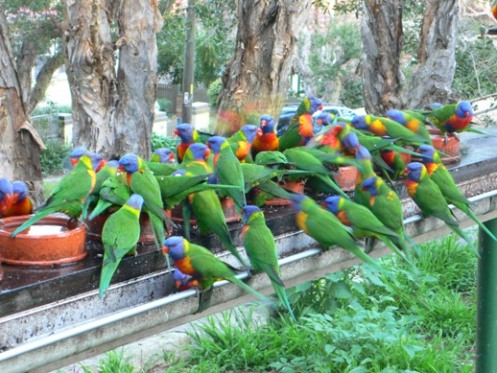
Uploaded by request of Shaswati Sengupta

Taken in Paramatta, Sydney

This was one of my favorite jobs... one that brought me close to the nature. Feeding the wild parrots in the backyard of my house. All of them took great effort & patience to fly down everyday to my backyard early morning & evening to feed on moist bread.